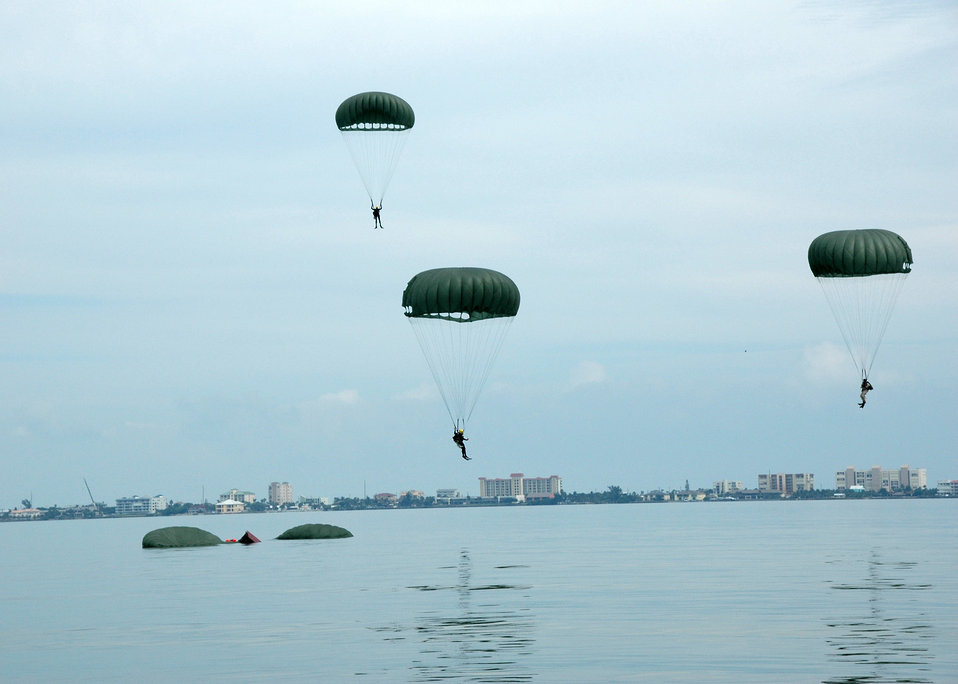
In the Drop Zone

PJ trainees parachute into the Banana River.